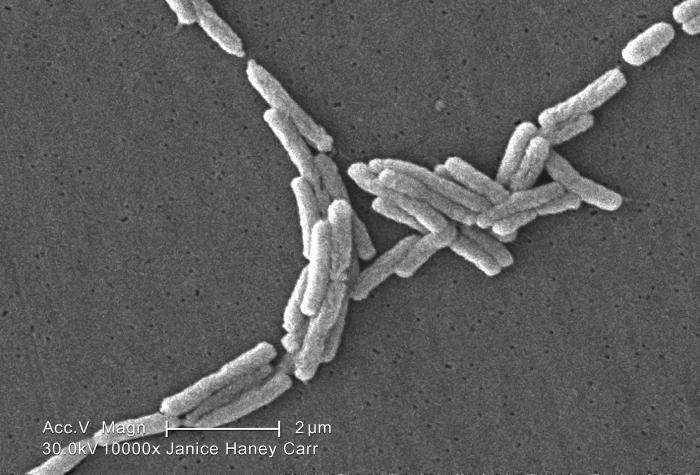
Under a moderately-high magnification of 10000X, this scanning electron micrograph (SEM) depicted a number of Gram-negative Legionella pneumophila bacteria. Please see PHIL 11092 through 11152 for additional SEMs of these organisms, specifically PHIL 11138 for a colorized version of this image. Of particular importance, is the presence of polar flagella, and pili, or long streamers, which due to their fragile nature, in some of these views seem to be dissociated from any of the bacteria. For a better view of these cellular appendages, see the colorized version.